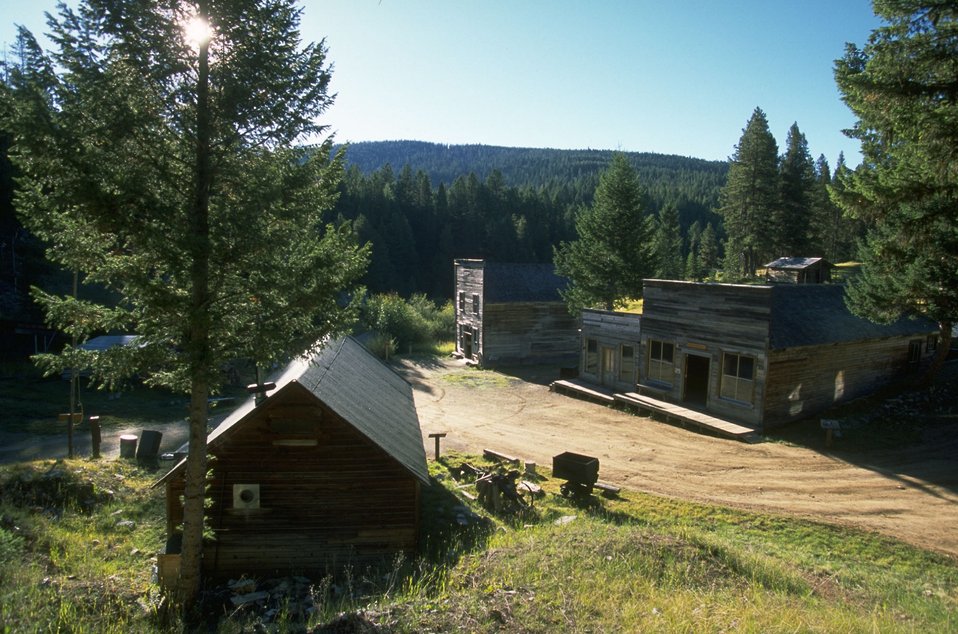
Garnet Ghost Town with old tavern (current visitor center) in foreground